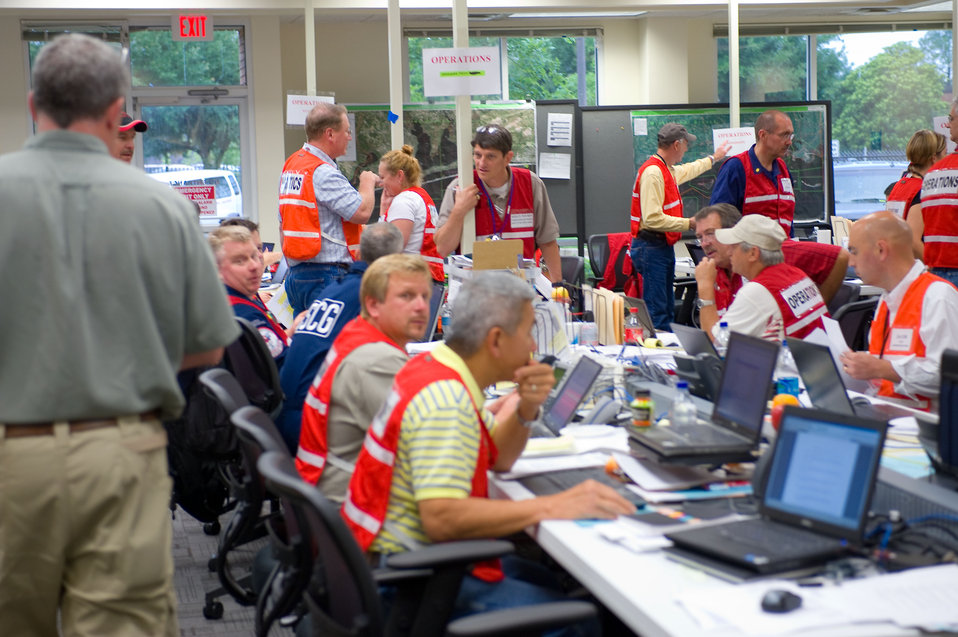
June 3, View from Mobile, Ala command post

Many responders come and go to fill specific roles during a response of this size. 'Job labeled vests' help identify the role a person plays in a command post where numerous agencies are involved.